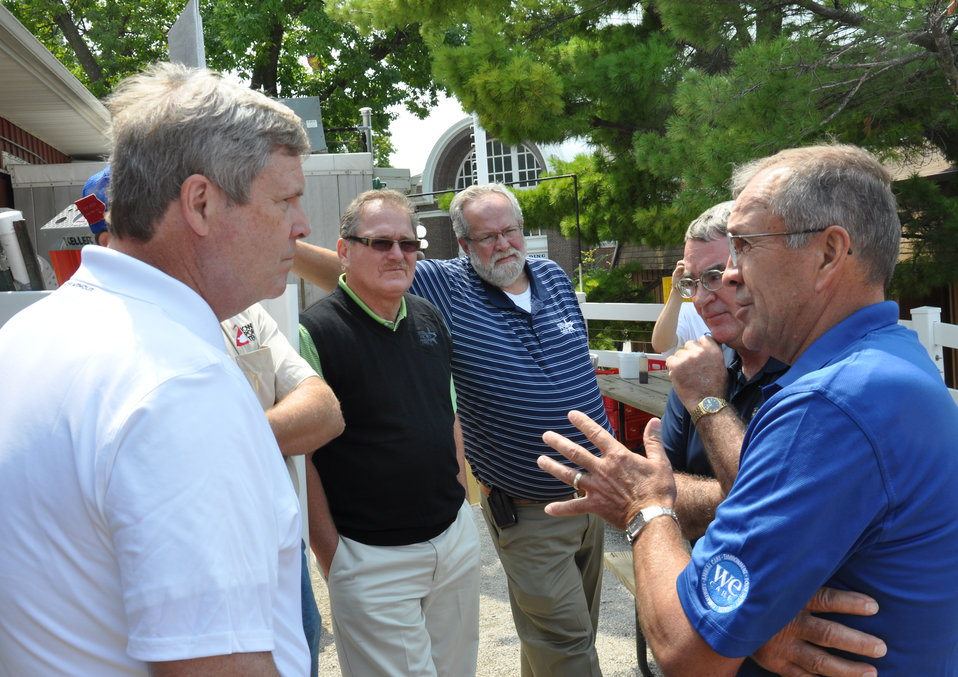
Agriculture Secretary Tom Vilsack (left) talks with stakeholders during his tour of the Iowa State Fair in Des Moines, Iowa, on Thursday, August 16, 2012.

The Secretary was in Iowa As part of continuing steps by the Obama Administration to assist livestock producers in response to the historic drought. USDA will utilize nearly $16 million in financial and technical assistance to immediately help crop and livestock producers in 19 states to cope with the adverse impacts of the historic drought. In addition, USDA will initiate a transfer of $14 million in unobligated program funds into the Emergency Conservation Program. These funds can be used to assist in moving water to livestock in need, providing emergency forage for livestock, and rehabilitating lands severely impacted by the drought. Together these efforts should provide nearly $30 million to producers struggling with drought conditions.Most recently, Secretary Vilsack signed disaster designations for an additional 44 counties in 12 states including Iowa as primary natural disaster areas due to damage and losses caused by drought and excessive heat.